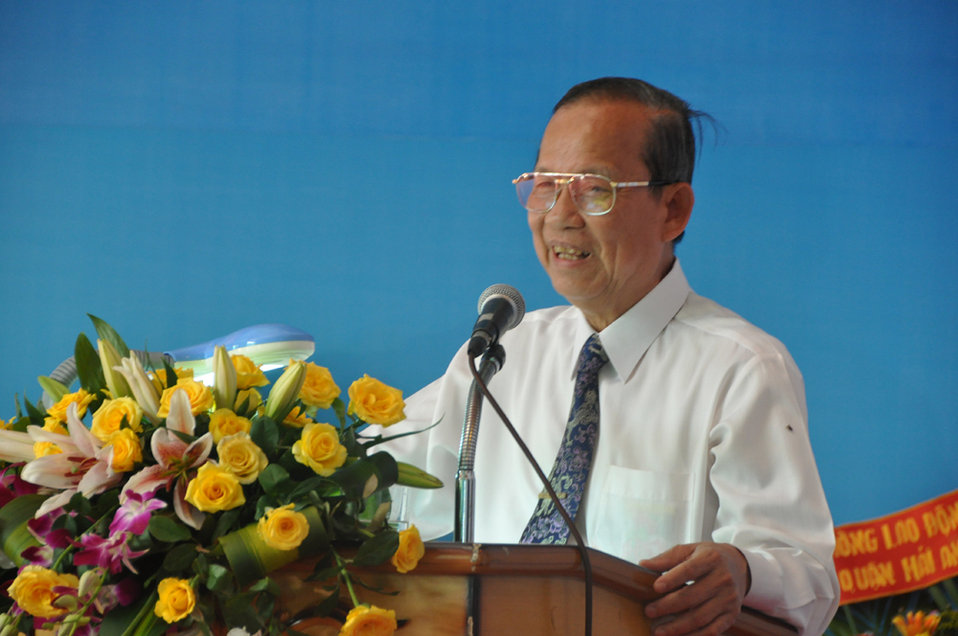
Co-pay Methadone Treatment Center Opens in Hai Phong on June 18, 2011

Deputy Prime Minister Truong Vinh Trong.